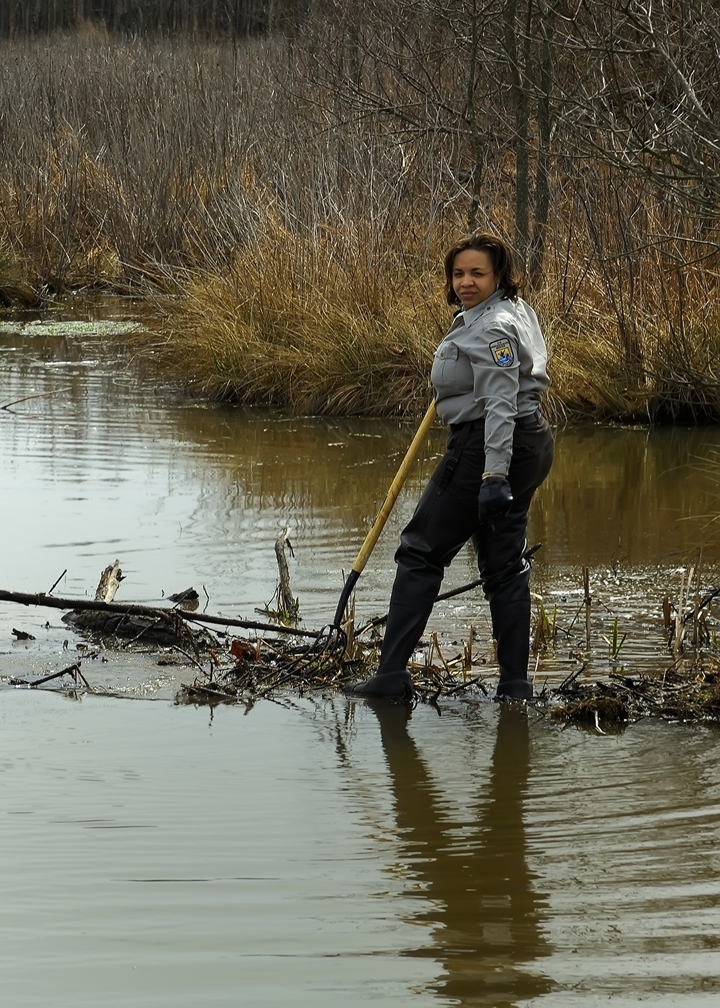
Daffny Hoskie, deputy refuge manager of the Potomac River National Wildlife Refuge Complex, works to break up a beaver dam to allow natural water movement at Occoquan Bay National Wildlife Refuge in Virginia. (Bill Wallen)